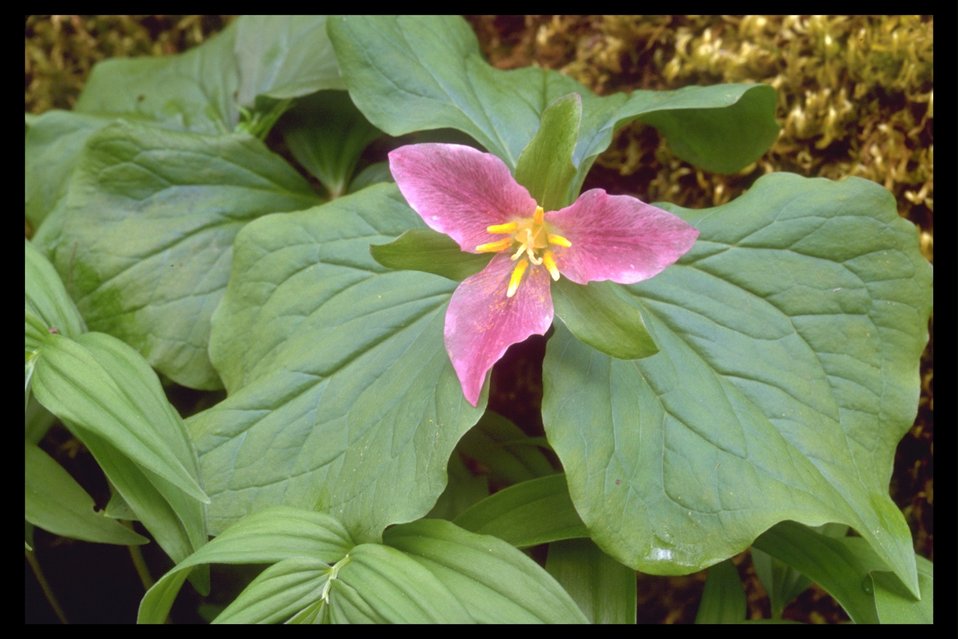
Western Trillium (Trillium ovatum) near West Fork Evans Creek.